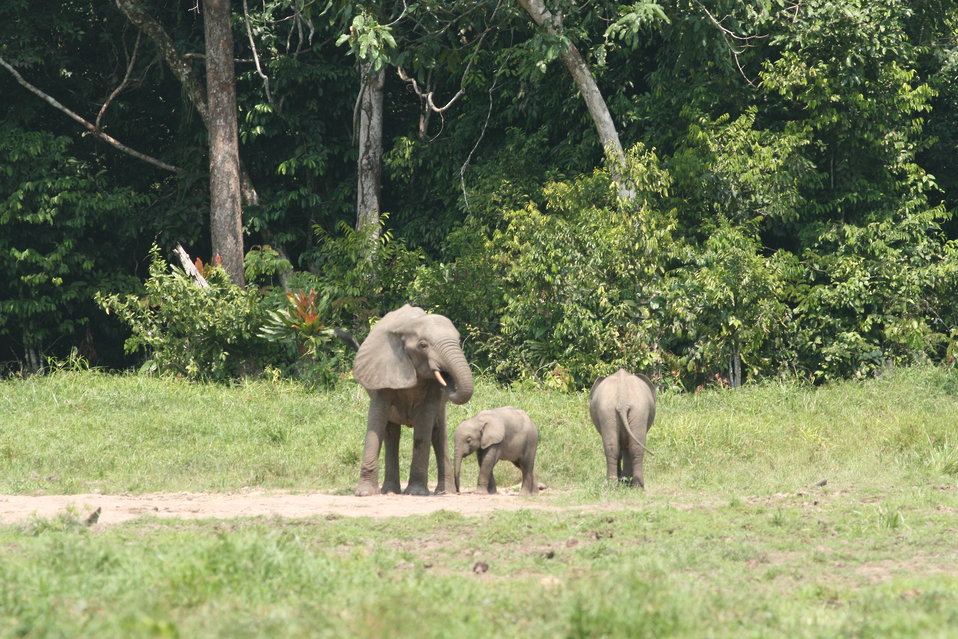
African elephant family group in a rainforest clearing.